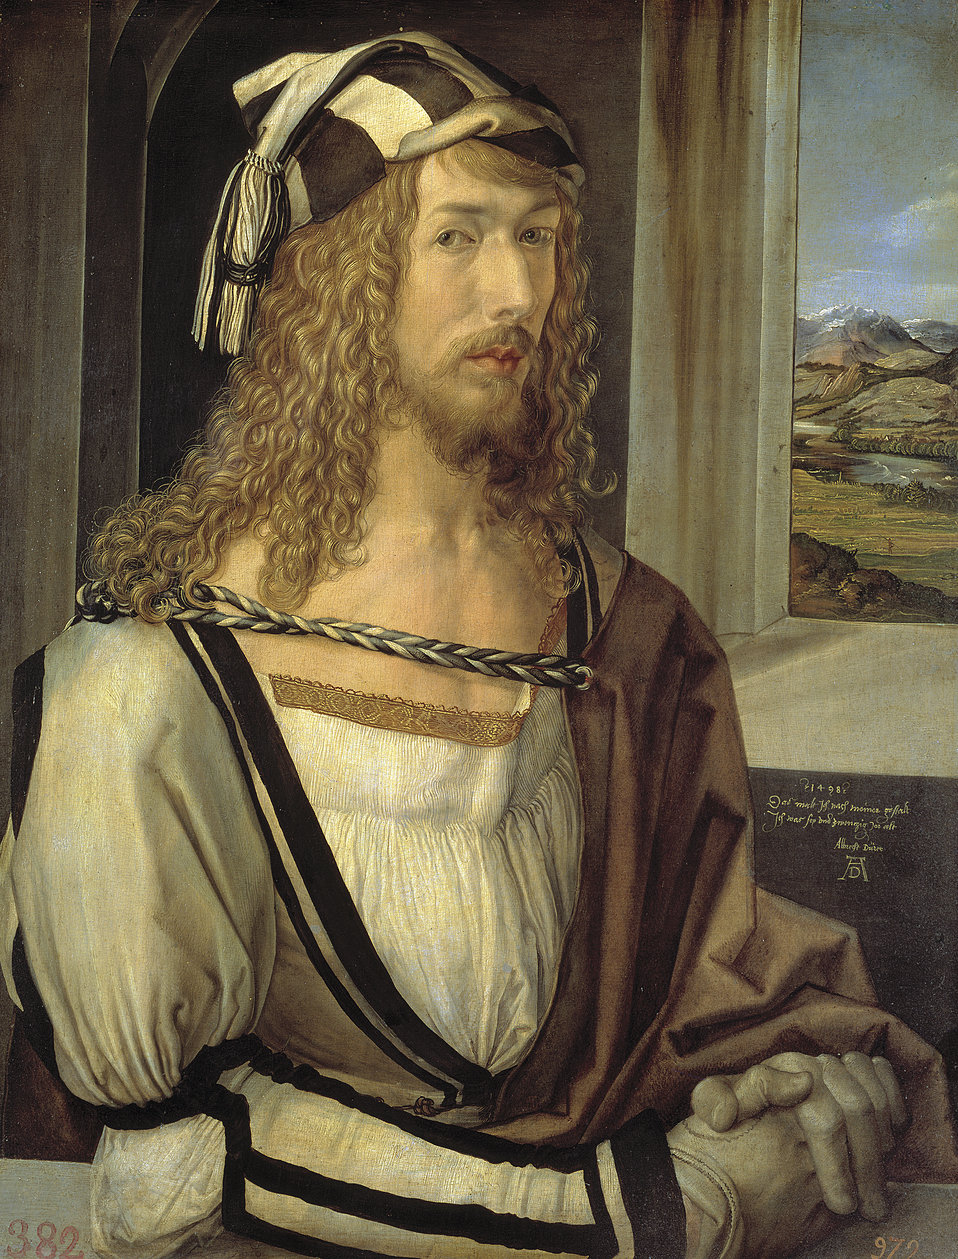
Albrecht Dürer, Selbstbildnis mit 26 Jahren (Prado, Madrid)